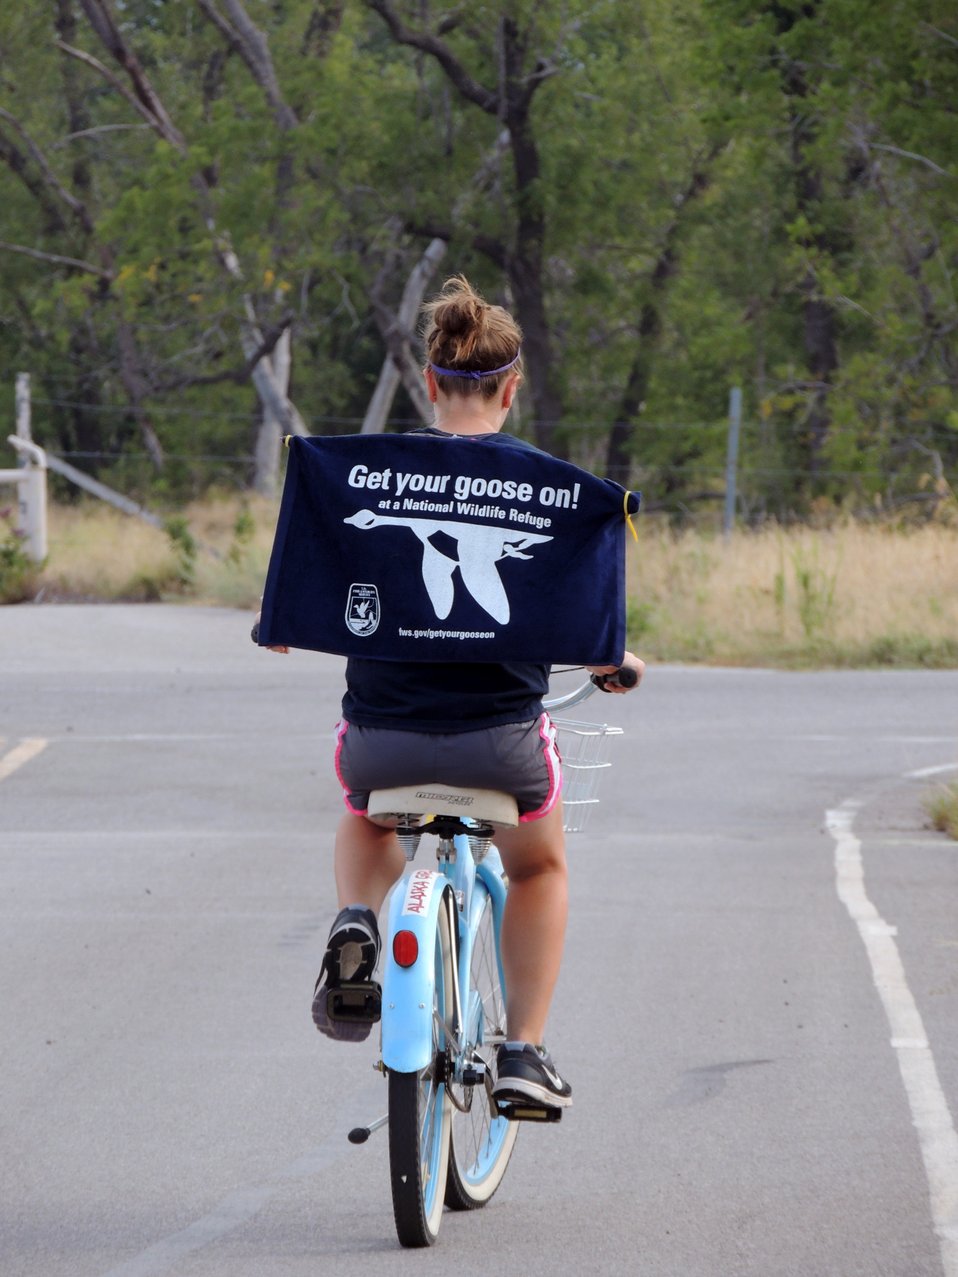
Get Your Goose On!

Wichita Mountains National Wildlife Refuge in Oklahoma.